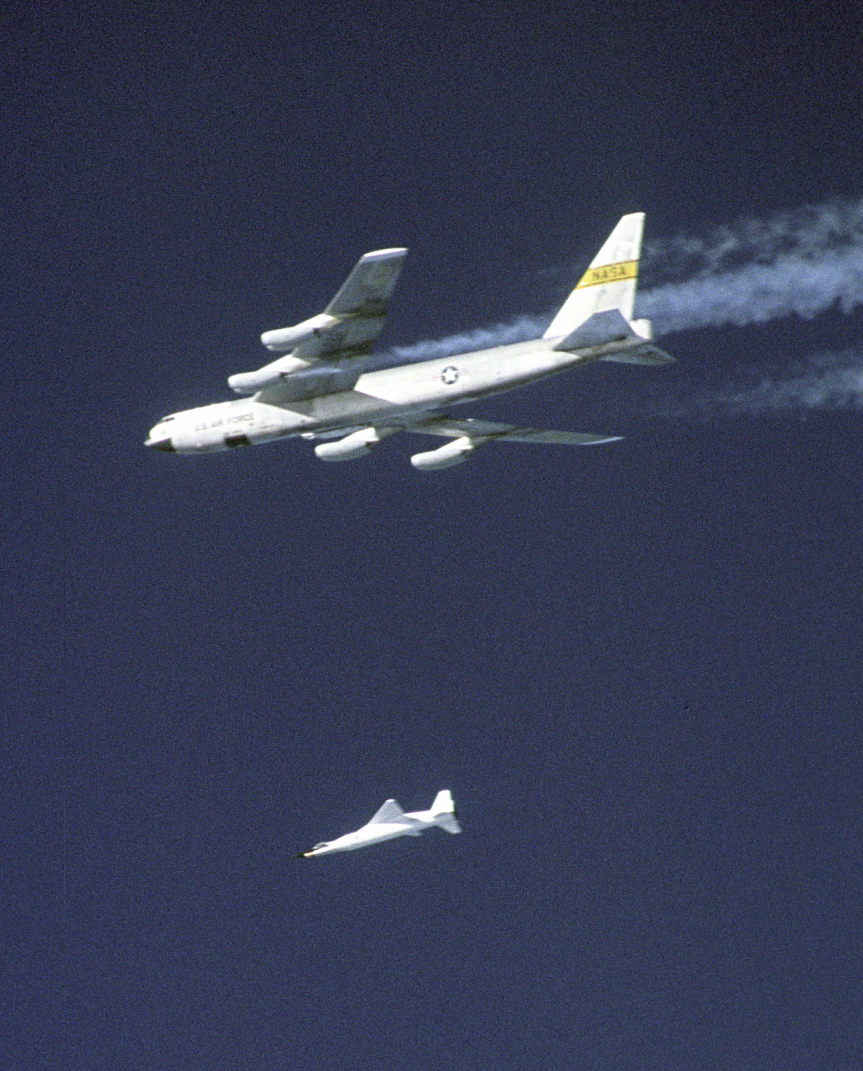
NASA X-43A rockets to Mach 9.8 at Edwards

OVER THE PACIFIC OCEAN -- An X-43A hypersonic research aircraft and its modified Pegasus booster rocket drop away from NASA's B-52B launch here Nov. 16. The mission originated from the National Aeronautics and Space Administration's Dryden Flight Research Center at Edwards Air Force Base, Calif. Moments later the Pegasus booster ignited to accelerate the X-43A to its intended speed of Mach 10.